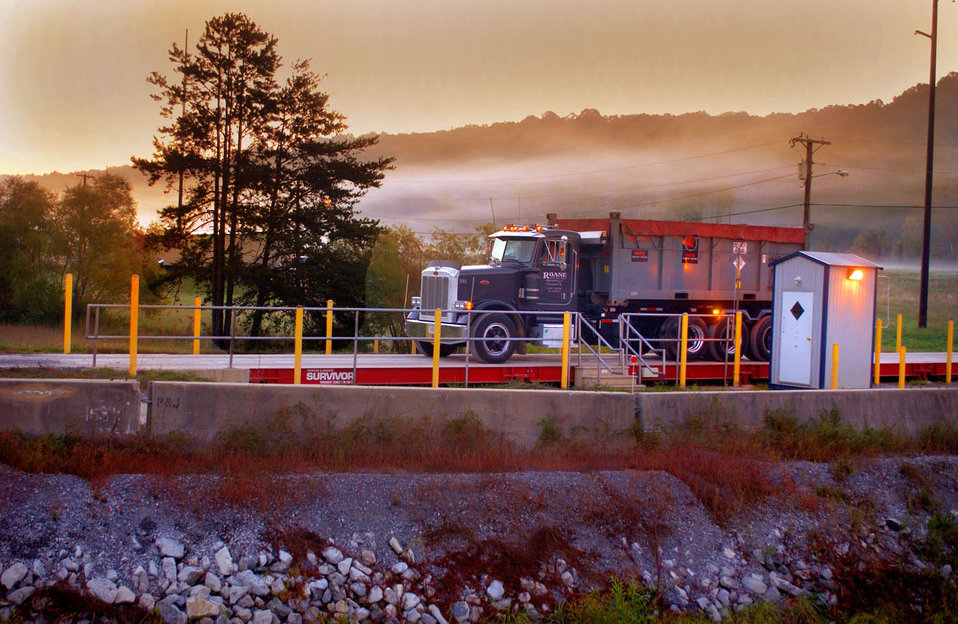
Shipping

A truck hauling waste on the Oak Ridge Office of Environmental Management’s private Haul Road.